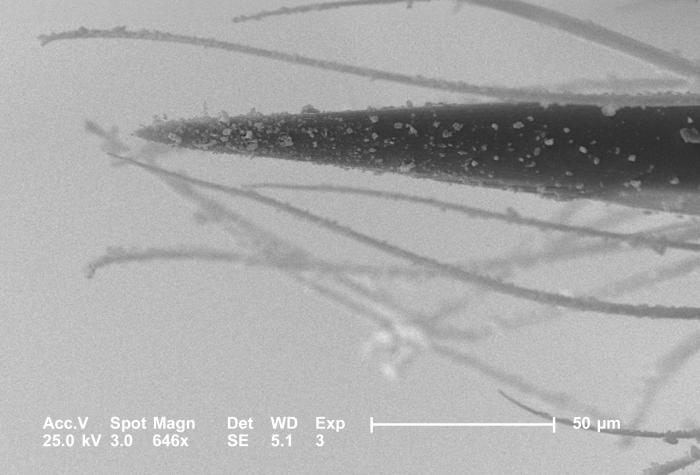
Under a moderately high magnification of 646x, this scanning electron micrograph (SEM) depicted some of the ultrastructural morphologic details seen at the distal tip of the stinger apparatus of an unidentified hymenopteran insect found deceased in the Decatur, Georgia suburbs. The Order of Hymenoptera includes bees, wasps, ants, and sawflies. Judging from the smooth nature of this stinger shaft, this was probably something other than a honeybee, whose stinger shaft would have displayed more defined, broader barbs at the distal tip. The smoother nature of this stinger shaft, would have allowed the stinger to be easily extracted without it becoming inextricably embedded when it was penetrating a victim's skin, as is the case with the Western honeybee, Apis mellifera.At this magnification, note that the shaft is covered with what seems to be debris that had been picked up from the insects environmental surroundings.